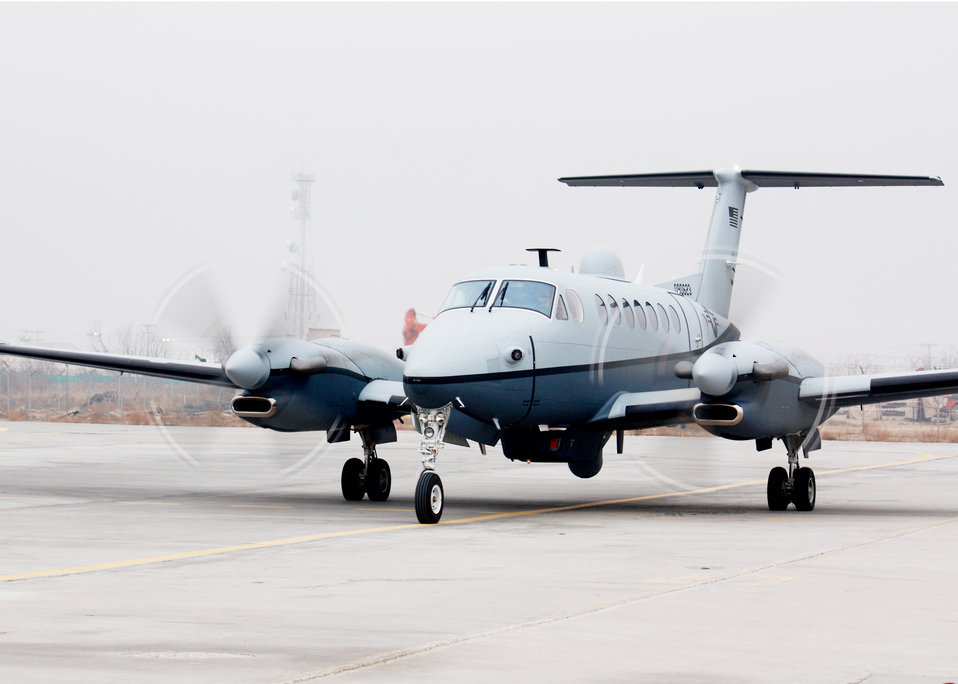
MC-12 arrival into the 455th Air Expeditionary Wing

Airmen welcomed the first Air Force MC-12 to be based in Afghanistan Dec. 27, 2009. The aircraft brings another capability to Operation Enduring Freedom, because the MC-12 is not just an aircraft, but a complete collection, processing, analysis and dissemination system of Airmen committed to securing Afghanistan and protecting Afghan and coalition lives.